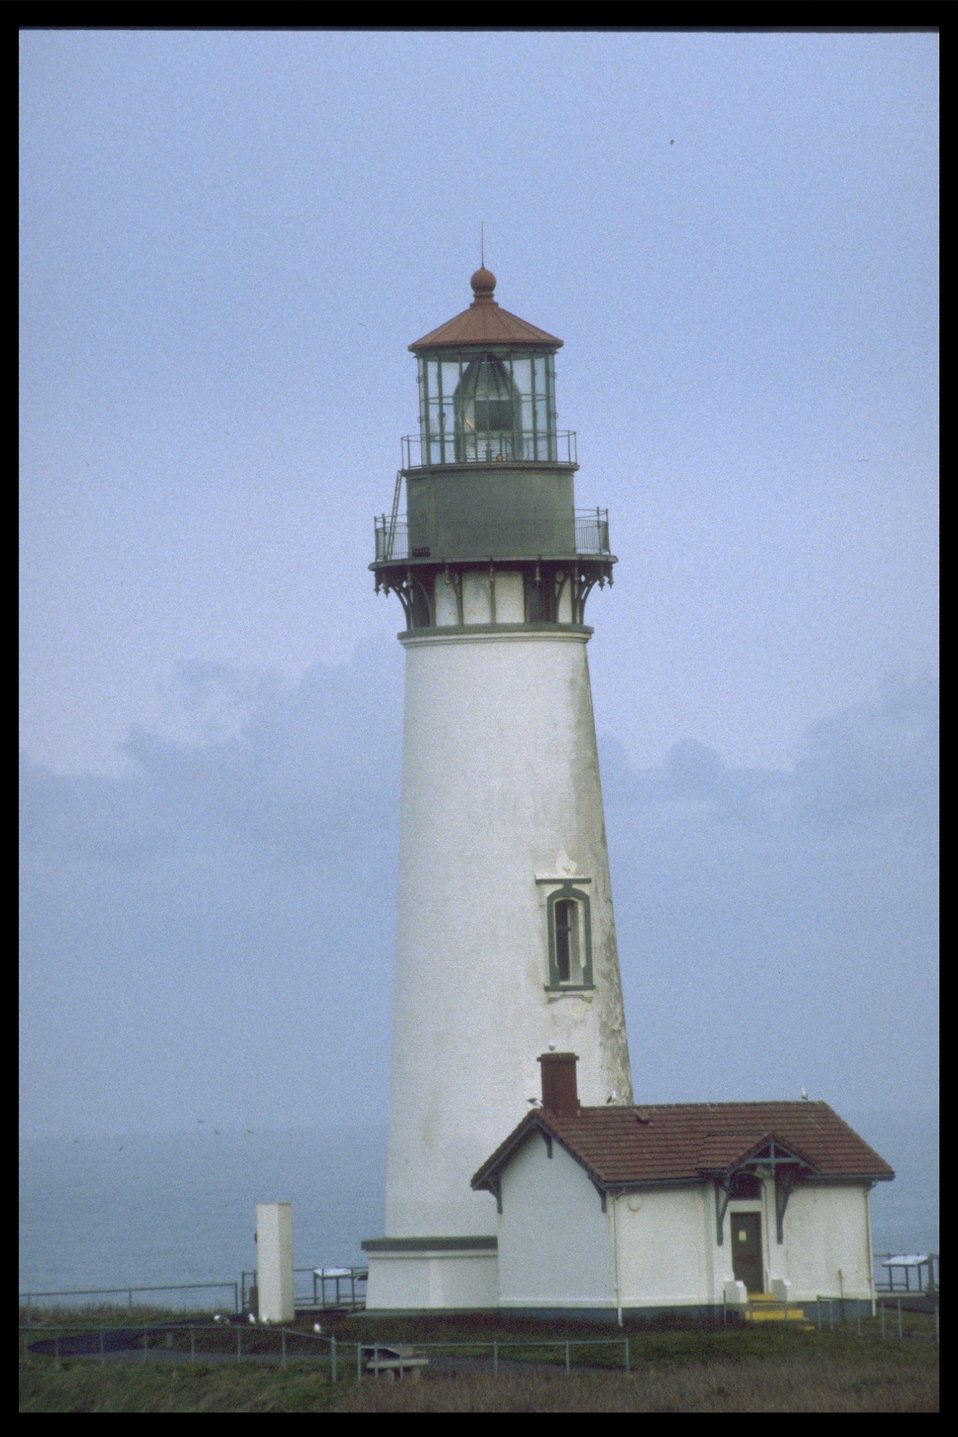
Yaquina Head Lighthouse.